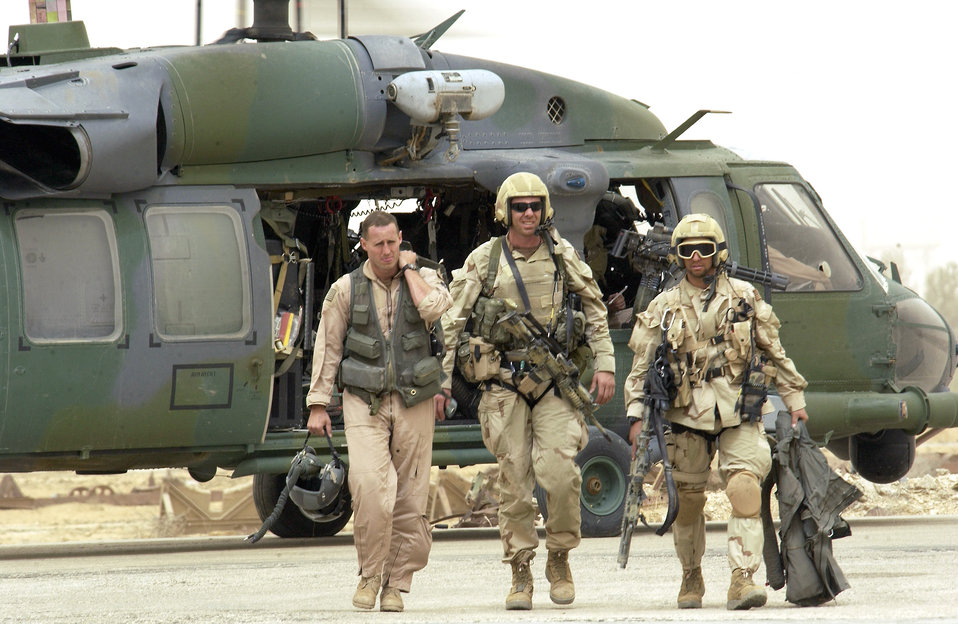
Bring 'em back alive

OPERATION IRAQI FREEDOM -- Pararescuemen with the 301st Rescue Squadron return with a downed pilot from a successful rescue mission April 8 at a forward deployed location in southern Iraq during Operation Iraqi Freedom. Operation Iraqi Freedom is multinational coalition effort to liberate the Iraqi people, eliminate Iraq's weapons of mass destruction and bring an end to the regime of Saddam Hussein.